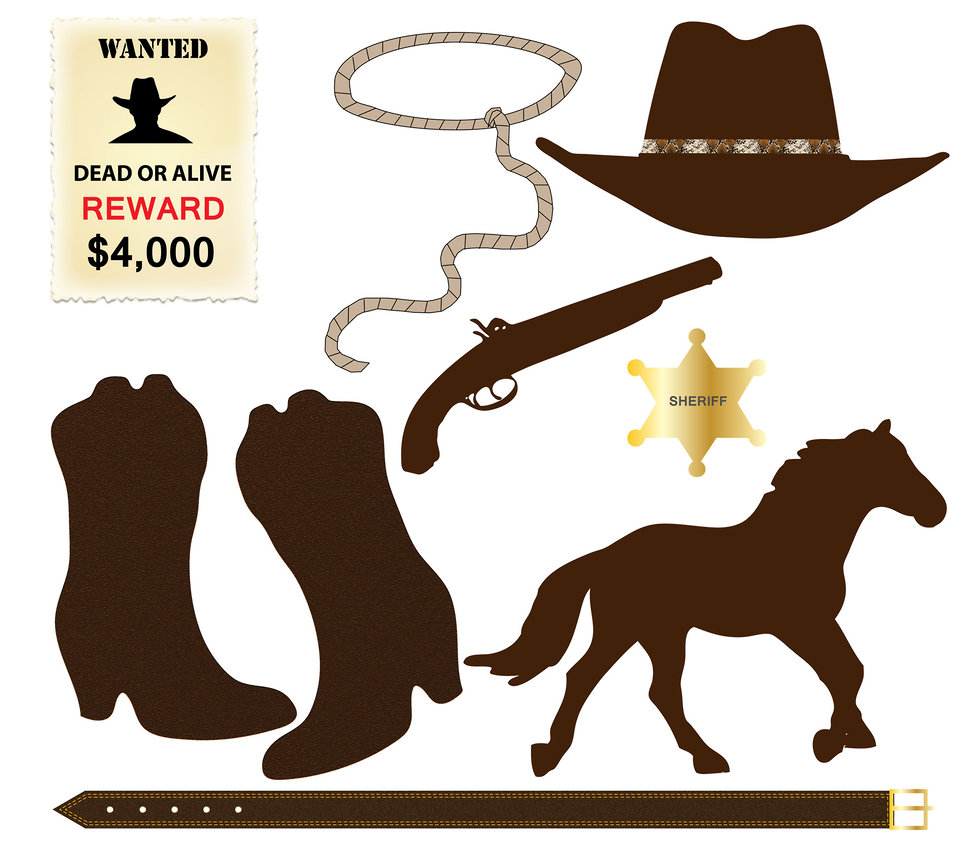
Cowboy icons clip-art

Cowboy clip-art symbols for scrapbooking.